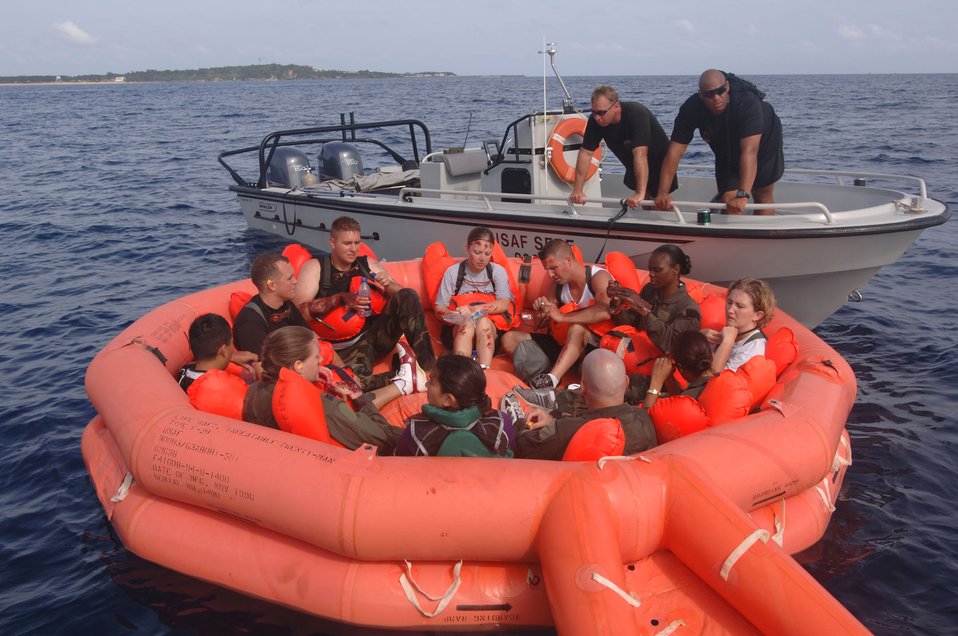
Rescue me

KADENA AIR BASE, Japan -- Airmen sit inside a life raft before being